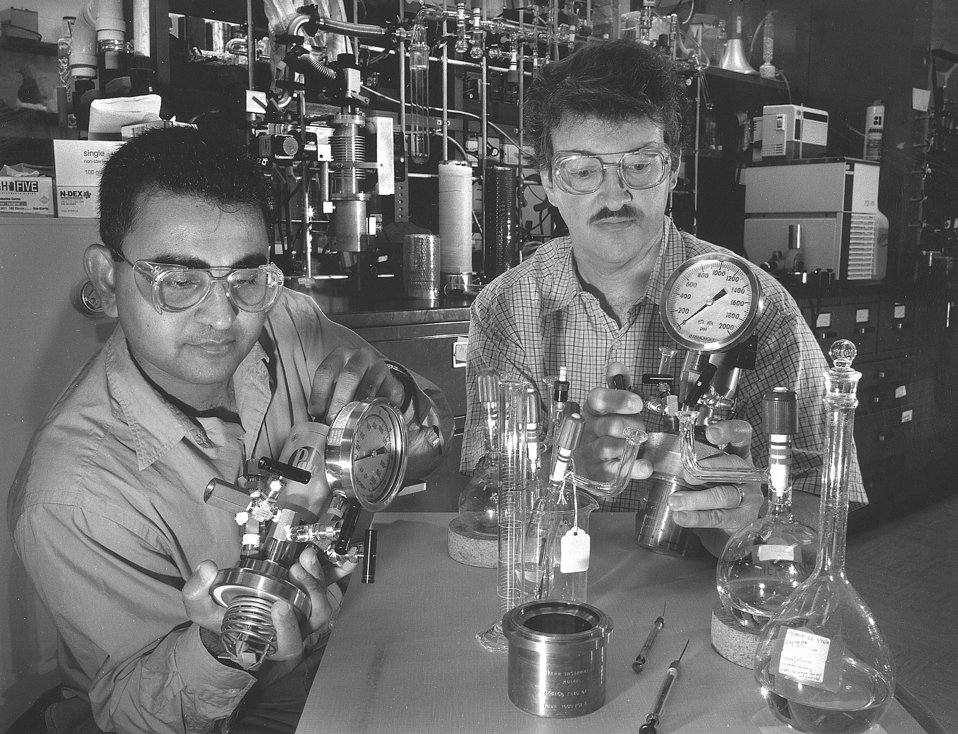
BNL researchers prepare for an experiment to test a new class of catalysts.

BNL developed this new class catalysts with Dupont for converting renewable feedstocks to useful industrial materials. Industrial chemicals and fibers are traditionally derived from petroleum based feedstocks. These plant- based products may offer an economically advantageous, energy saving environmentally friendly alternative for Dupont and other chemical and synthetic-fiber manufacturers.